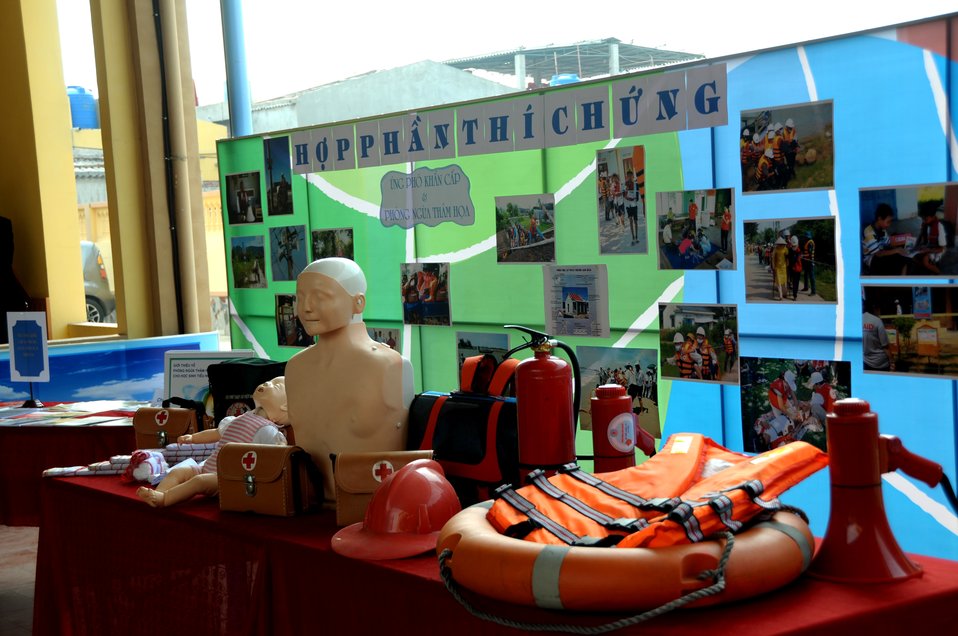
USAID launches the Vietnam Forests and Deltas project in Nam Dinh province.

Quat Lam, Nam Dinh. January 16, 2014.